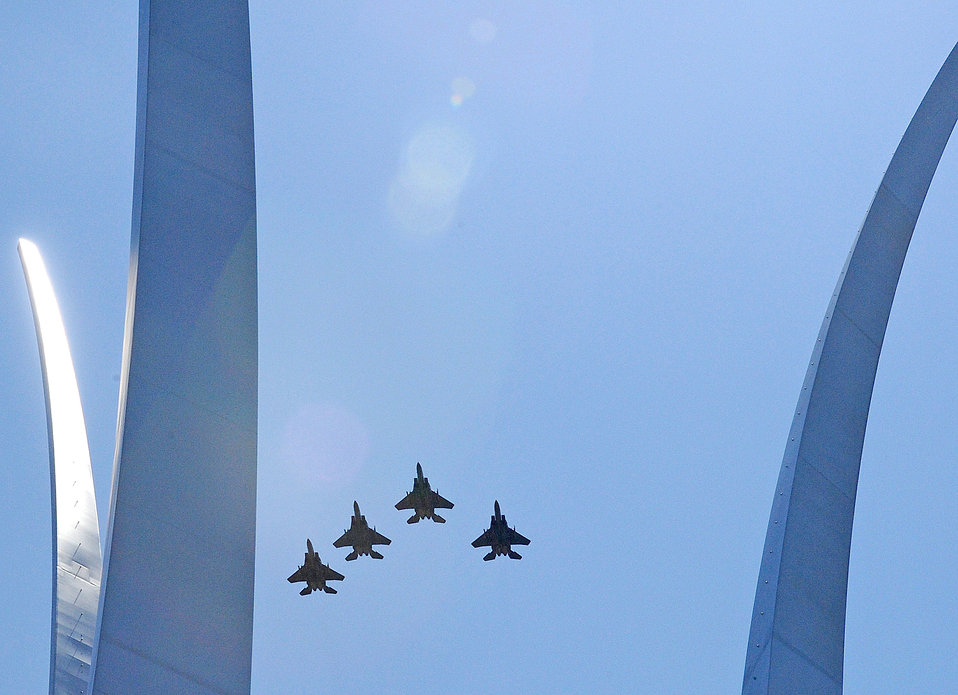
Doolittle Award

Four F-15E Strike Eagles fly June 2, 2011, above the Air Force Memorial in Arlington, Va., following the 4th Fighter Wing's acceptance of the inaugural Doolittle Award. The Air Force Historical Foundation's new distinction acknowledges sustained, distinctive contributions to the history and heritage of the U.S. Air Force, and is named after aviation pioneer James H. Doolittle, who served as a lieutenant general in the United States Army Air Forces during World War II and received the Medal of Honor for valor and leadership as commander of the famous Doolittle Raid.